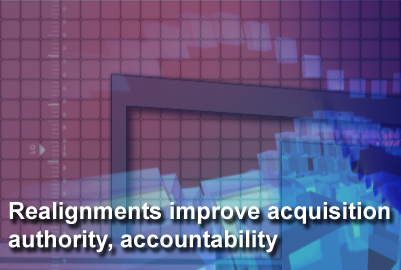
Realignment of acquisition organizations

The goal that underlies the realignment of acquisition organizations is to establish clear lines of authority and accountability.